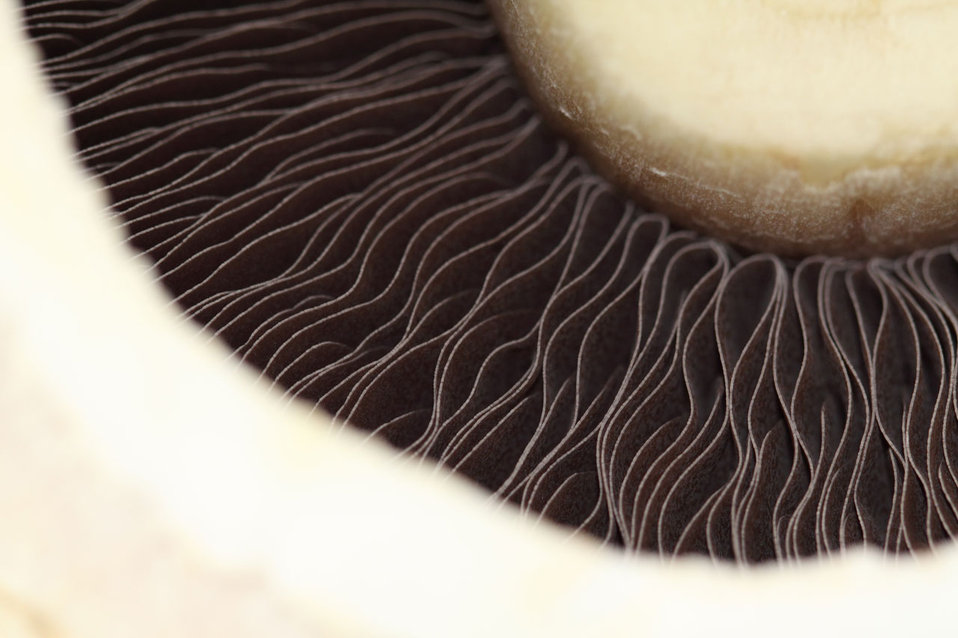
Mushroom detail

Close up picture of mushroom.